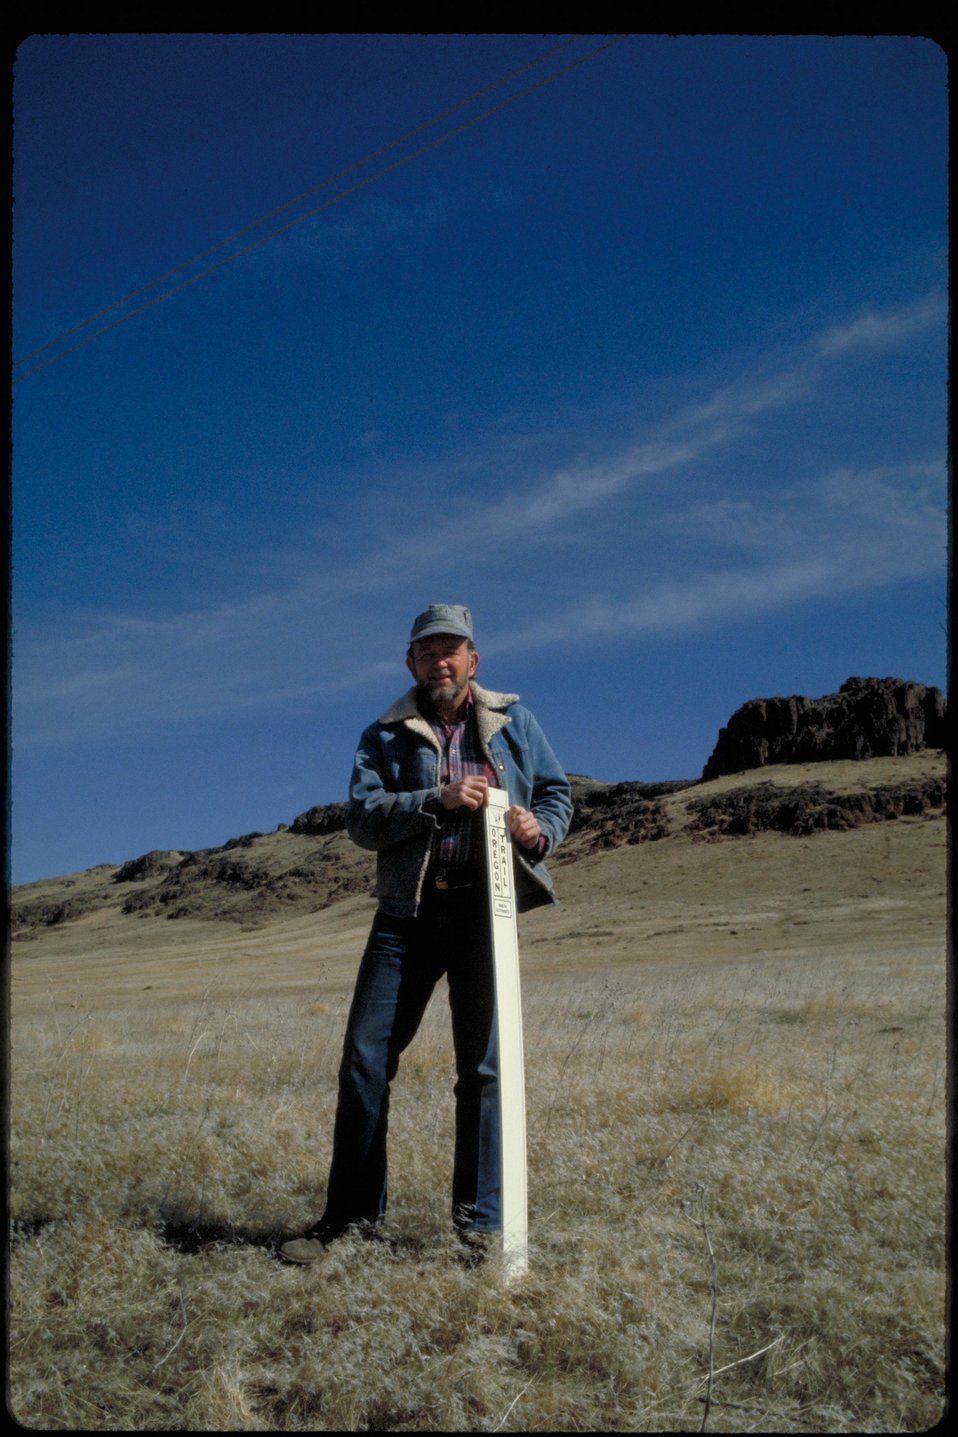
Oregon Trail South east of Teapot Dome Lower Snake River District